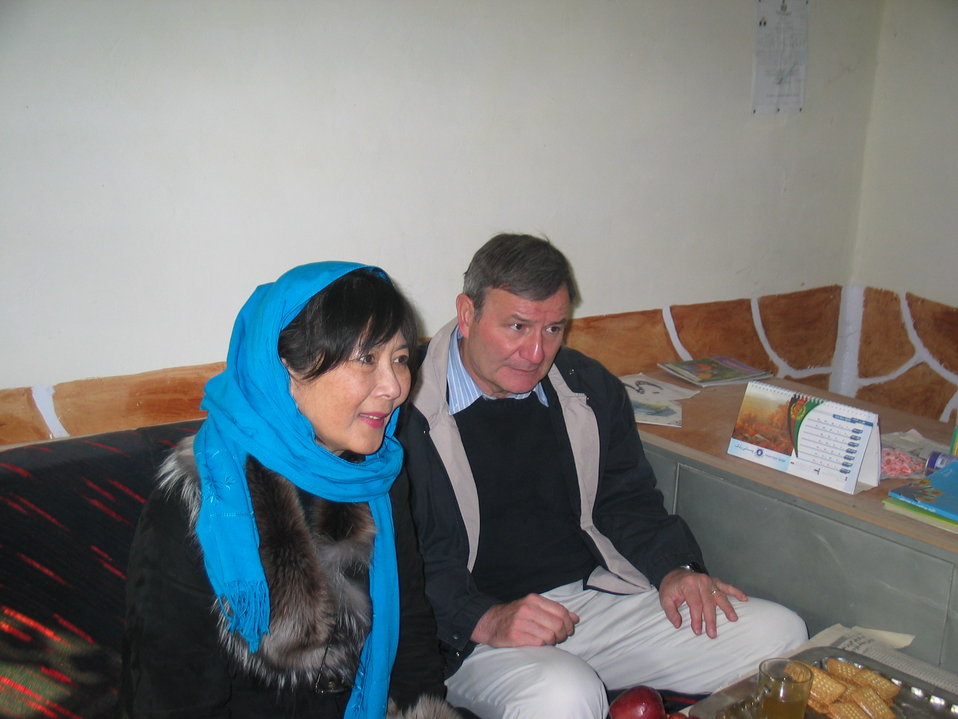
Kabul River Bridge Renovation, December 3, 2010